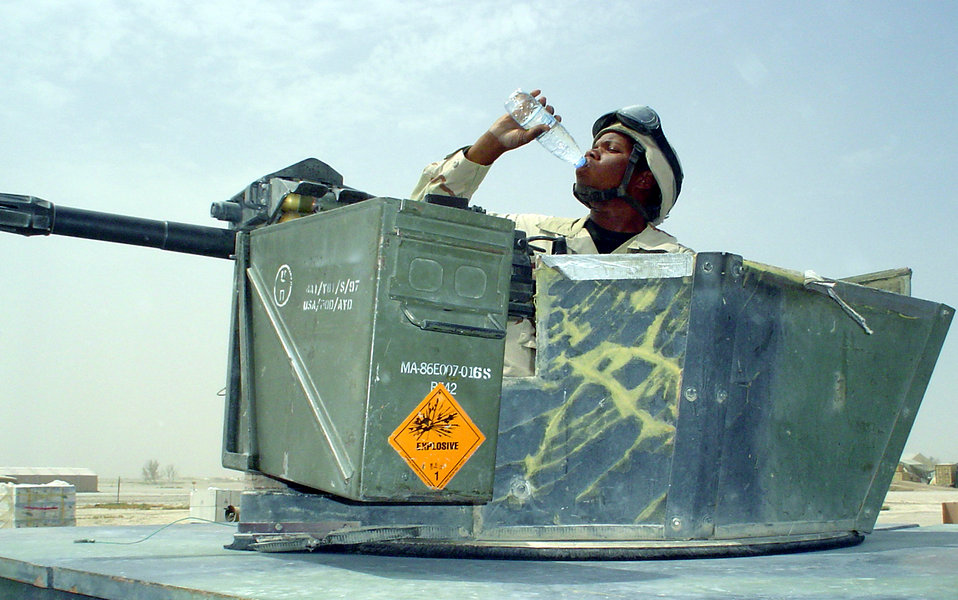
Water break

TALLIL AIR BASE, Iraq -- Senior Airman Maurice Brown takes a water break while on patrol here. He is a weapons-platform gunner with the 407th Expeditionary Security Forces Squadron. With temperatures routinely topping 120 degrees, base leaders stress drinking plenty of water throughout the day to stay hydrated.